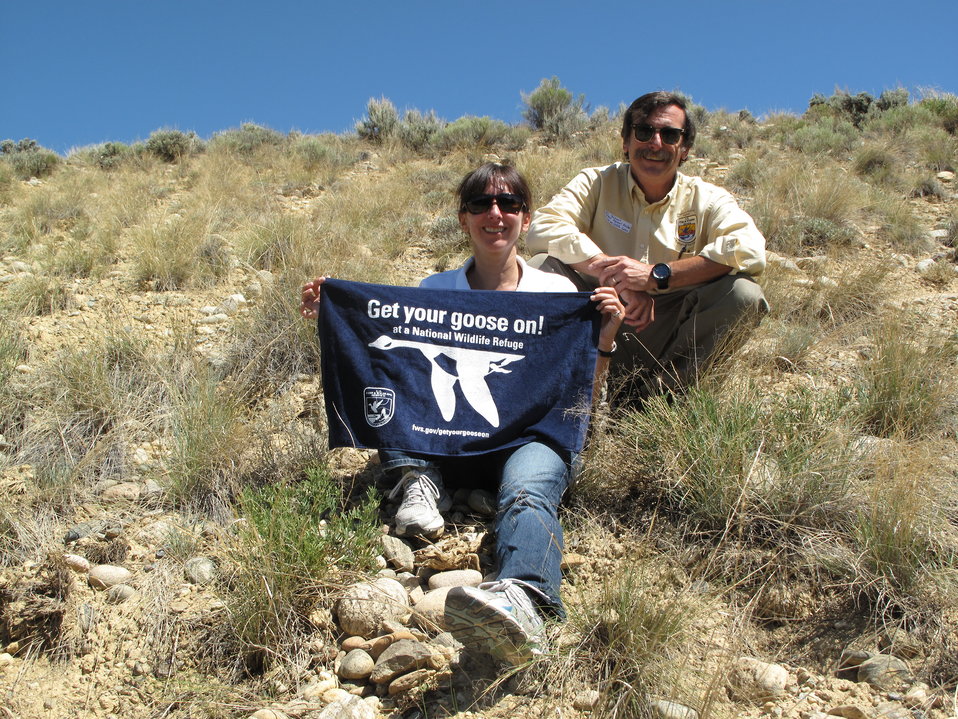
Ecological Services' Listing Chief & Assistant Regional Director with Osterhout Milkvetch

Mountain Prairie Regional employees Bridget Fahey, chief of Ecological Service’s Division of Endangered Species, and, Mike Thabault, assistant regional director for Ecological Services, pose with a “Get your Goose on!” towel next to the endangered Osterhout milkvetch plant (bit.ly/PWBd86 ), at the Kemp Breeze State Wildlife Area south of Kremmling, Colo.